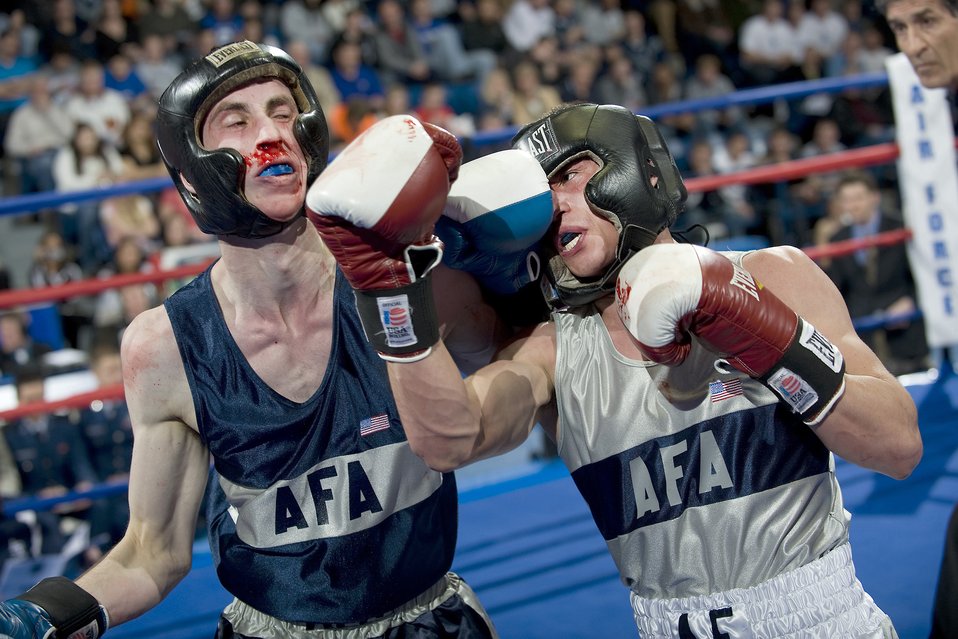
Academy Open Boxing Championship

Air Force junior Mike Mizes throws an uppercut to the jaw of freshman William Petersen during the U.S. Air Force Academy's Wing Open Championships held at the Academy's Clune Arena in Colorado March 5, 2010. Mizes went on to win the contest by decision.